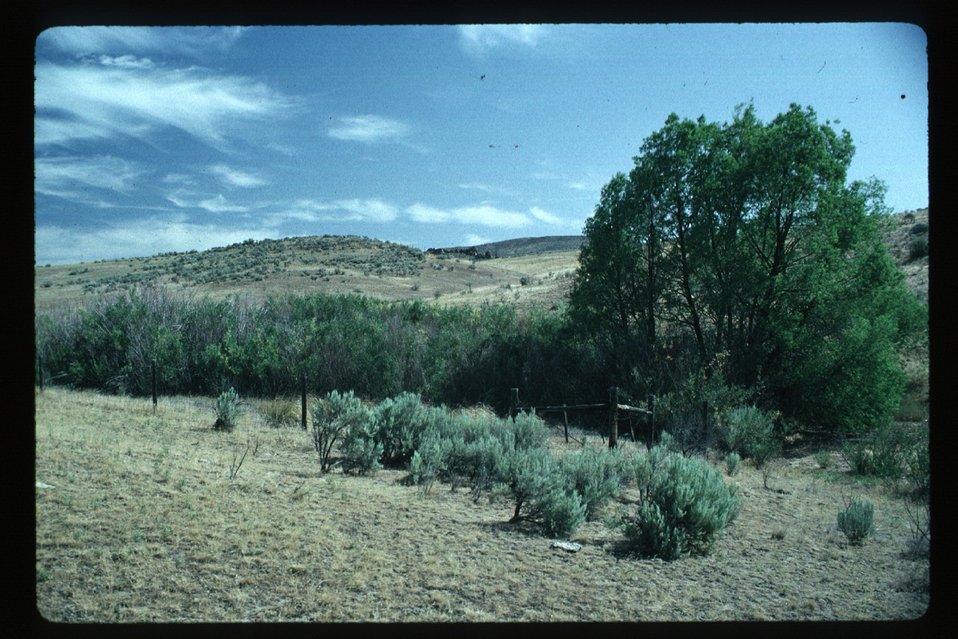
Riparian area Boise District LSRD Lower Snake River District